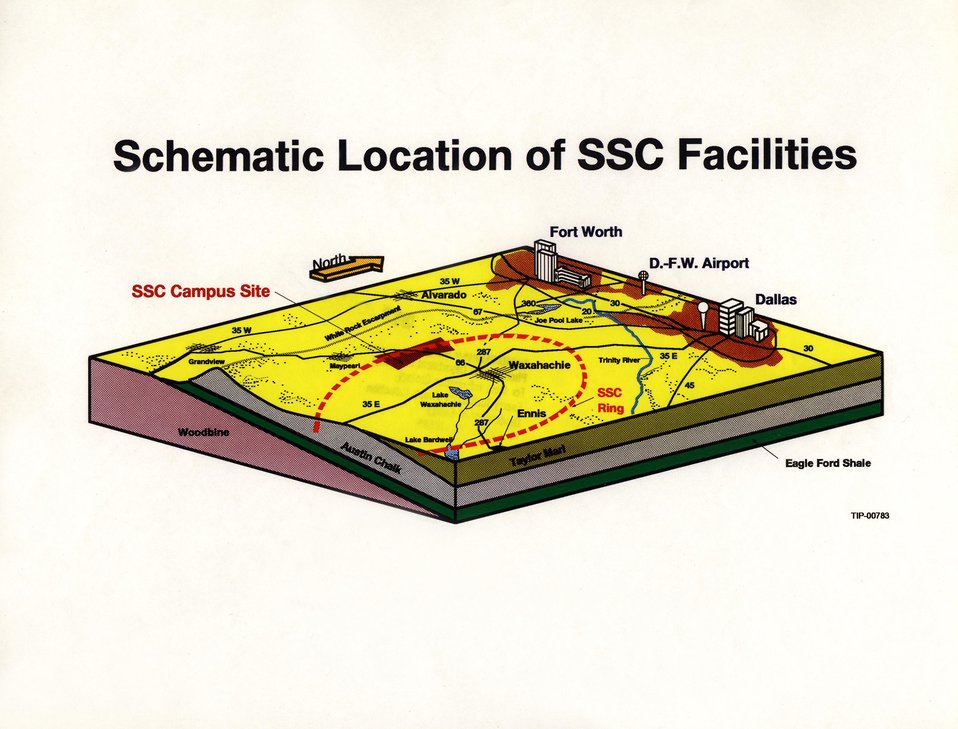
SCHEMATIC LOCATION OF SSC FACILITIES.

THE SSC IS UNDER CONSTRUCTION IN ELLIS COUNTY, TEXAS. IT WILL CONSIST OF A COLLIDER COMPRISING TWO RINGS OF SUPERCONDUCTING MAGNETS HOUSED UNDERGROUND IN A RACE-TRACK SHAPED TUNNEL THAT IS 14 FEET IN CROSS-SECTION AND 54 MILES IN CIRCUMFERENCE. AFTER PASSING THROUGH A CHAIN OF FOUR INJECTOR ACCELERATORS, TWO BEAMS OF PROTONS TRAVELING IN OPPOSITE DIRECTIONS WILL BE FURTHER ACCELERATED TO NEARLY THE SPEED OF LIGHT, COLLIDING AT 20 TRILLION ELECTRON VOLTS.